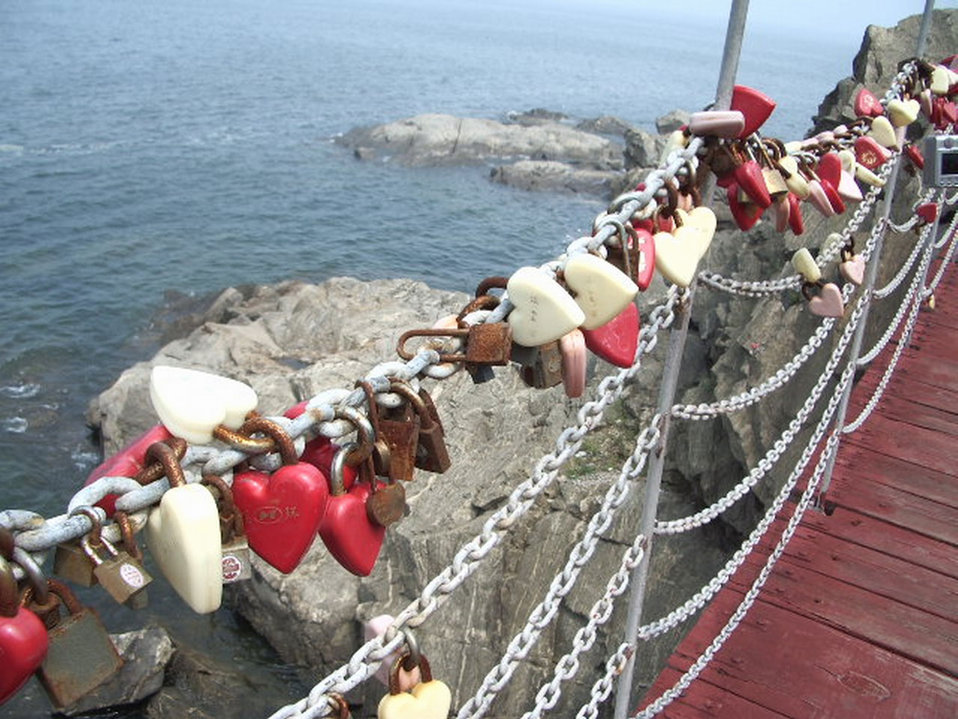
Locked hearts

Padlocks shaped as hearts locked on bridge.